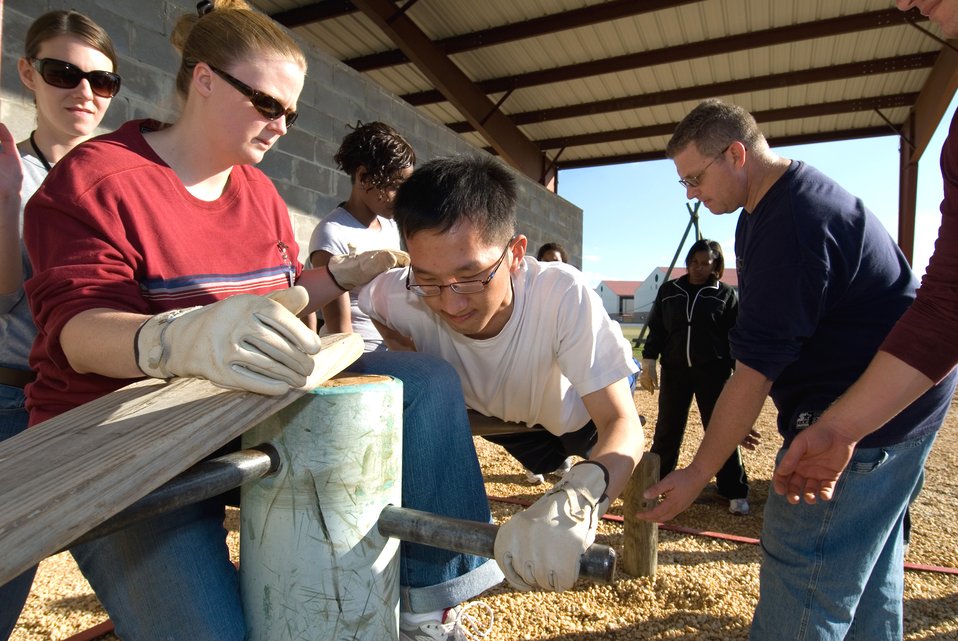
Civilians graduate with lessons in military culture

Civilian Acculturation and Leadership Training student Jana Ramon assists fellow student Eric Chan during a physical problem-solving exercise Nov. 3 at Maxwell Air Force Base, Ala. Students received two weeks of training at the Air Force Officer Training School.